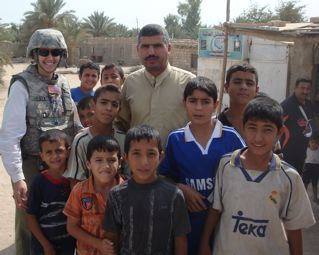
PRT PDO Cynthia Hogle visits with students and village leaders to gather information for PRT 'Good Neighbor Initiative' to assist those nearest to the FOB with school supplies and other needs in Karbala, Iraq, October 17, 2009.